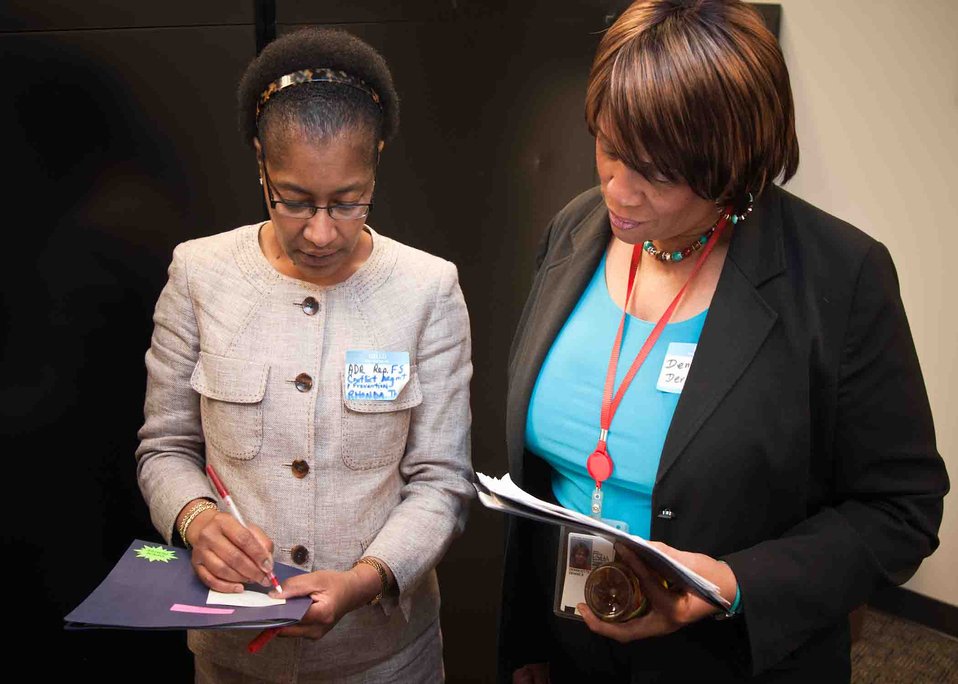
Alternative Dispute Resolution (ADR) Representative, Conflict Management and Prevention, Forest Service Rhonda Thomas and Forest Service employee Denise Derricotte network after an Early Resolution and Conciliation Division open house and training workshop for employees and supervisors at the United States Department of Agriculture (USDA) in Washington, DC, Wednesday, Jun. 15, 2011. The primary goal of the workshop was to strengthen the ADR community through outreach, training and partnership with agencies in USDA and make employees aware of ADR.